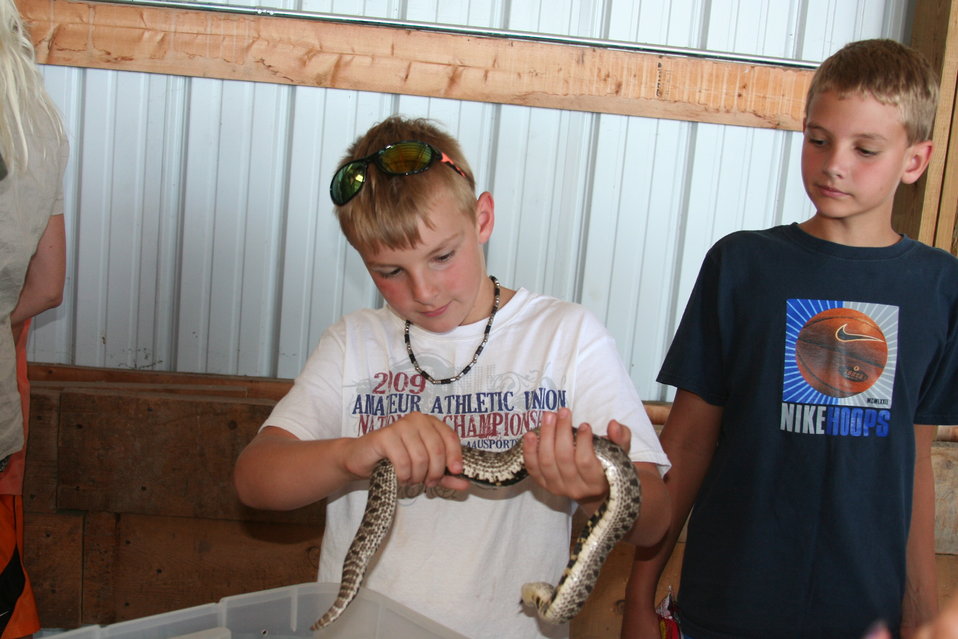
2011 Huron Prairie Fest